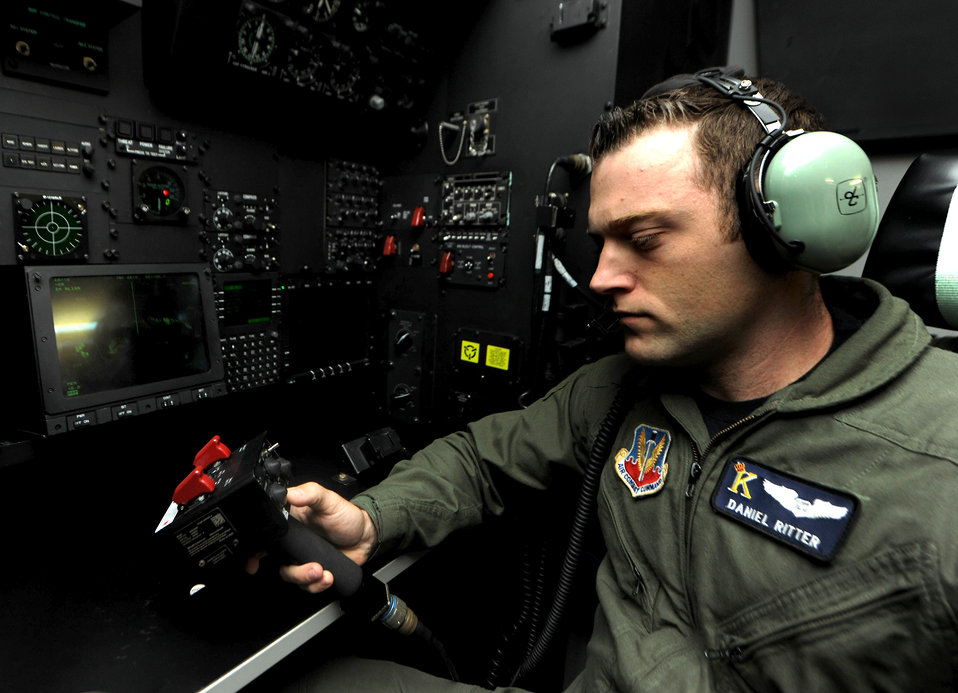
Flight simulator

Capt. Daniel Ritter uses the controls to the forward-looking infrared system while flying in the C-130 Hercules simulator Nov. 1, 2010, at Moody Air Force Base, Ga. The infrared system allows the crew to see harsh terrain during dense fog and hours of darkness. Captain Ritter is a 71st Rescue Squadron navigator.